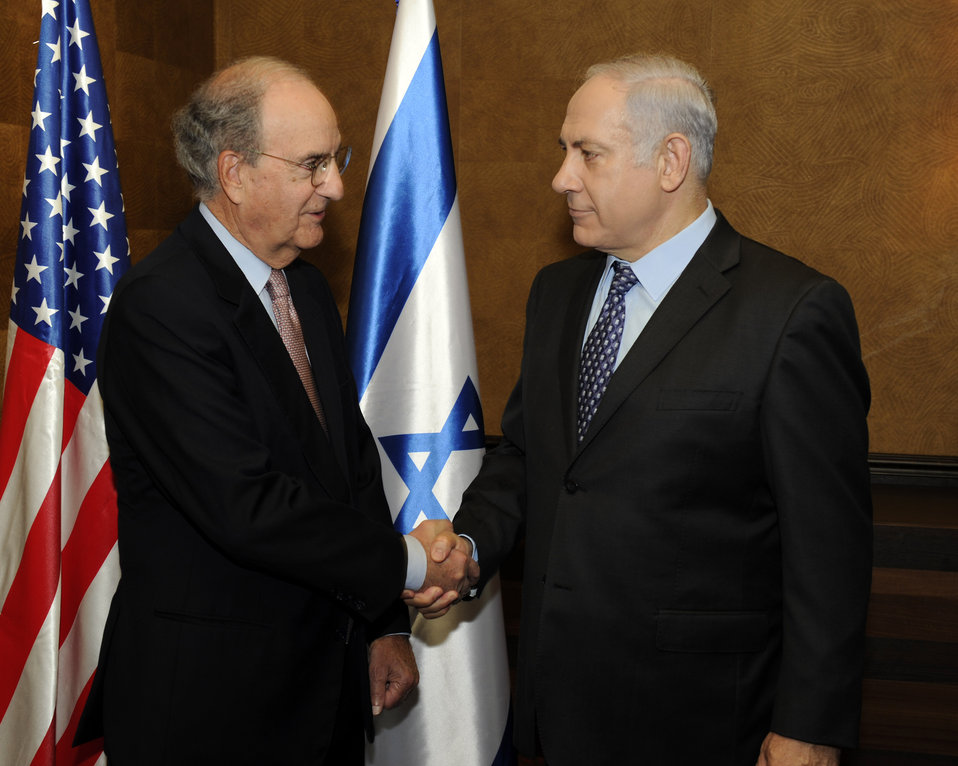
Special Envoy Mitchell Shakes Hands With Israeli Prime Minister Netanyahu

U.S. Special Envoy for Middle East Peace George J. Mitchell shakes hands with Israeli Prime Minister Benjamin Netanyahu in Caesarea, Israel, on September 29, 2010.